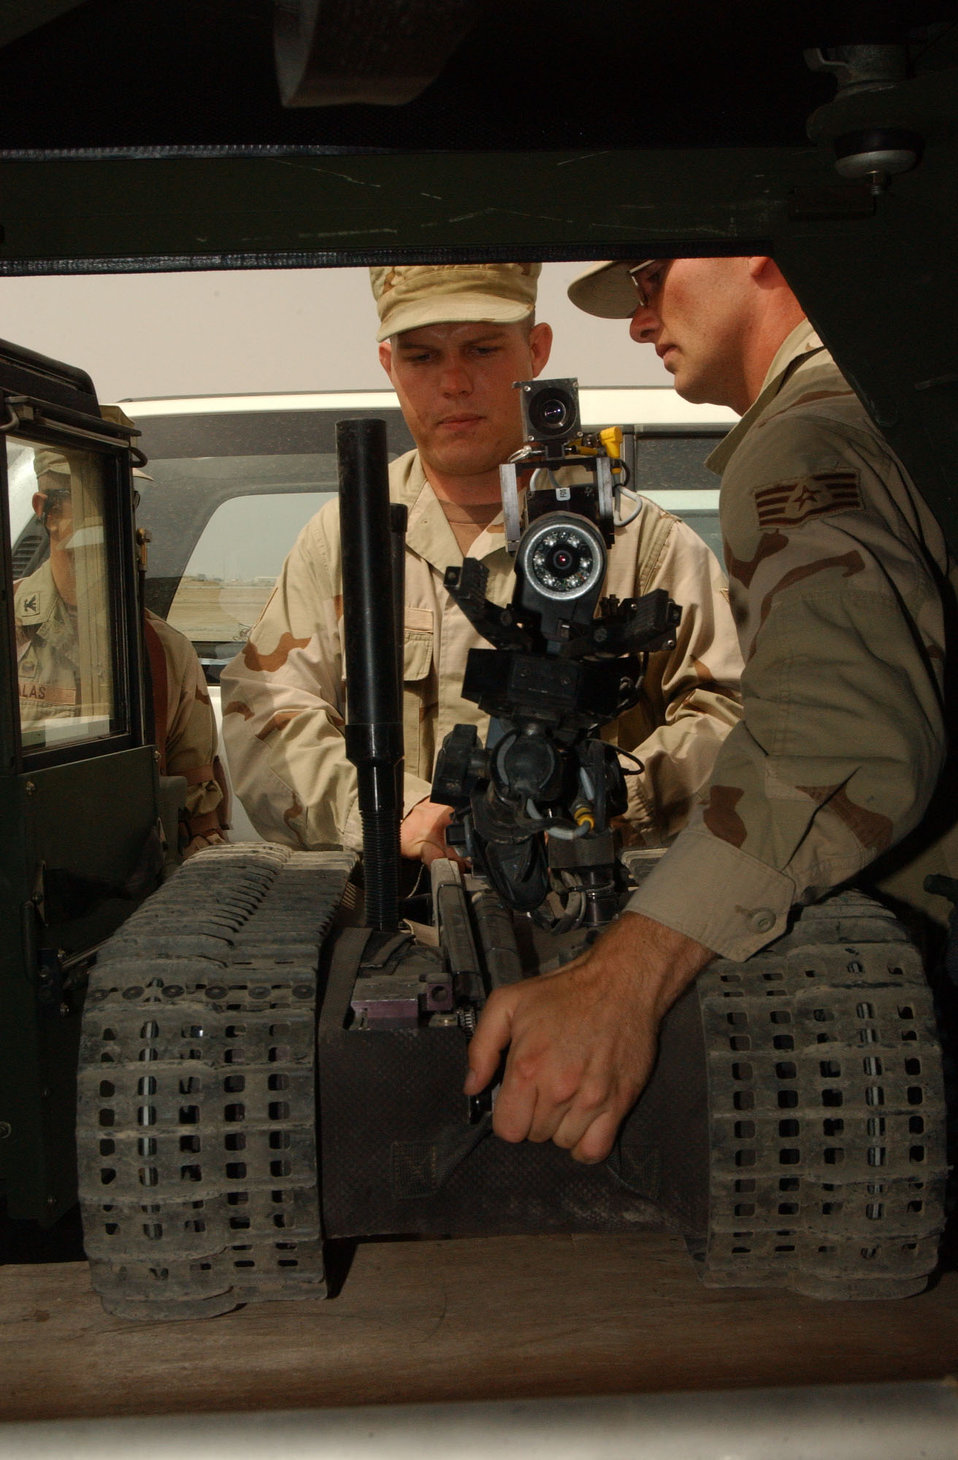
Robots, Airmen work together to defuse unexploded ordnance

BALAD AIR BASE, Iraq -- Staff Sgts. Clay Sigler (left) and Robert Butler unload a robot from the back of a Humvee here. Two small robots can be loaded into the vehicle and taken on a call. The Airmen are 332nd Explosive Ordnance Disposal technicians.